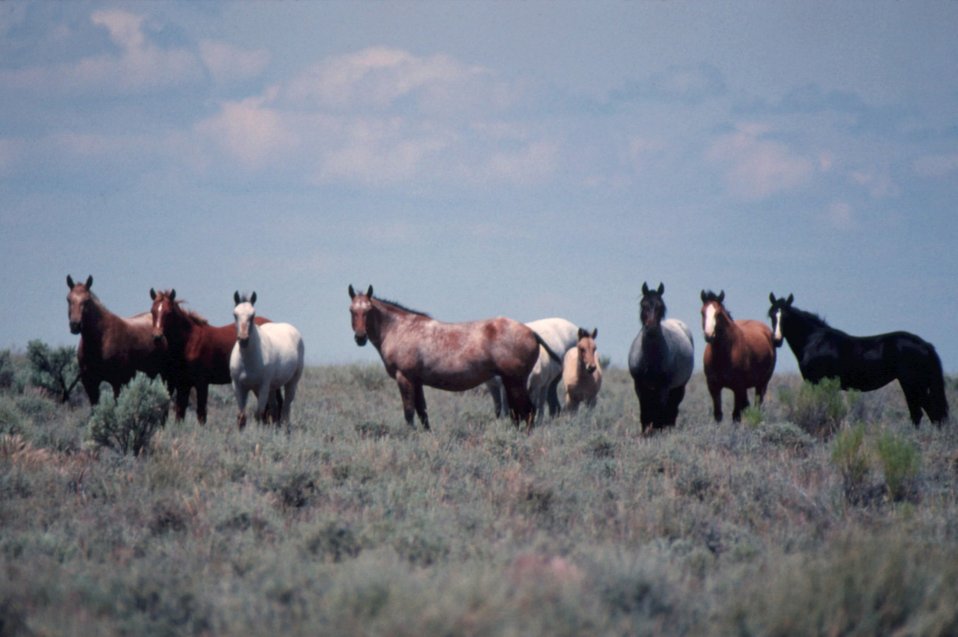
Warm Srpings Wild Horse Management Heard Area.